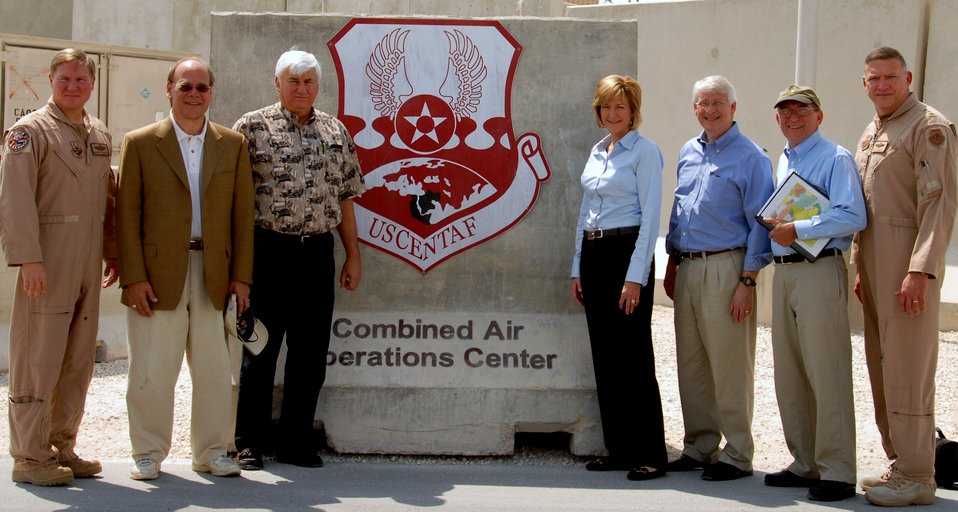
Congressional delegates visit U.S. CENTAF Airmen

Maj. Gen. Maurice H. Forsyth and congressional delegates Steven Cohen, F. Allen Boyd Jr., Betty Sutton, Roger Wicker and Wayne Gilchrest stand with Lt. Gen. Gary L. North at the entrance to the Combined Air and Space Operations Center Oct. 7 in Southwest Asia. General Forsyth is the deputy commander U.S. Central Command Air Forces and General North is the U.S. Central Command Air Forces commander.